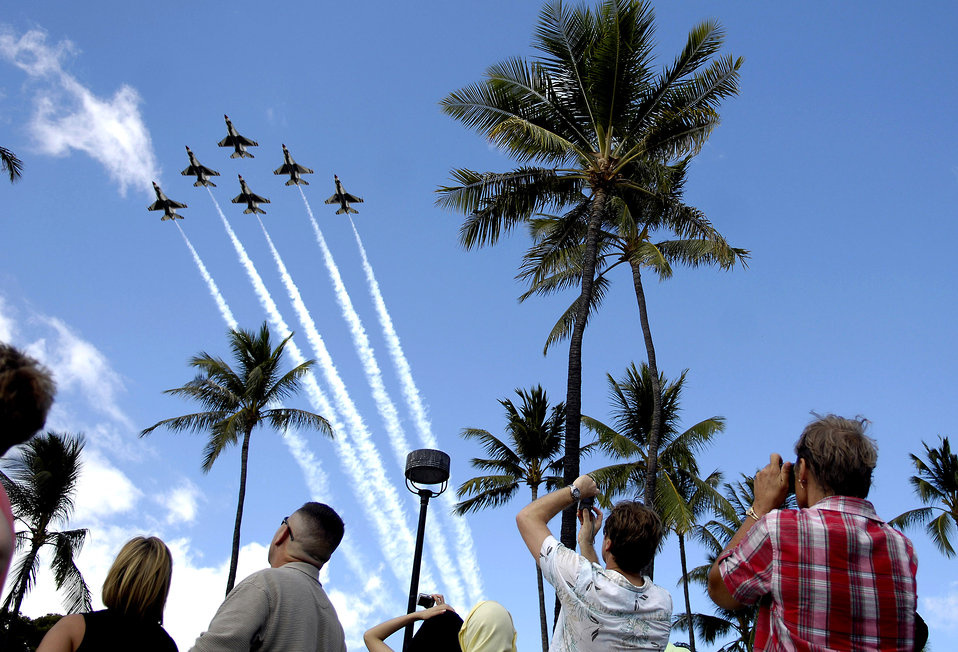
T-birds visit Waikiki

Spectators watch as the Air Force Air Demonstration Squadron, the Thunderbirds, fly over Waikiki, Hawaii, Sept. 13. The Thunderbirds performed the practice session before their show Sept. 15 for Air Force Week Honolulu.